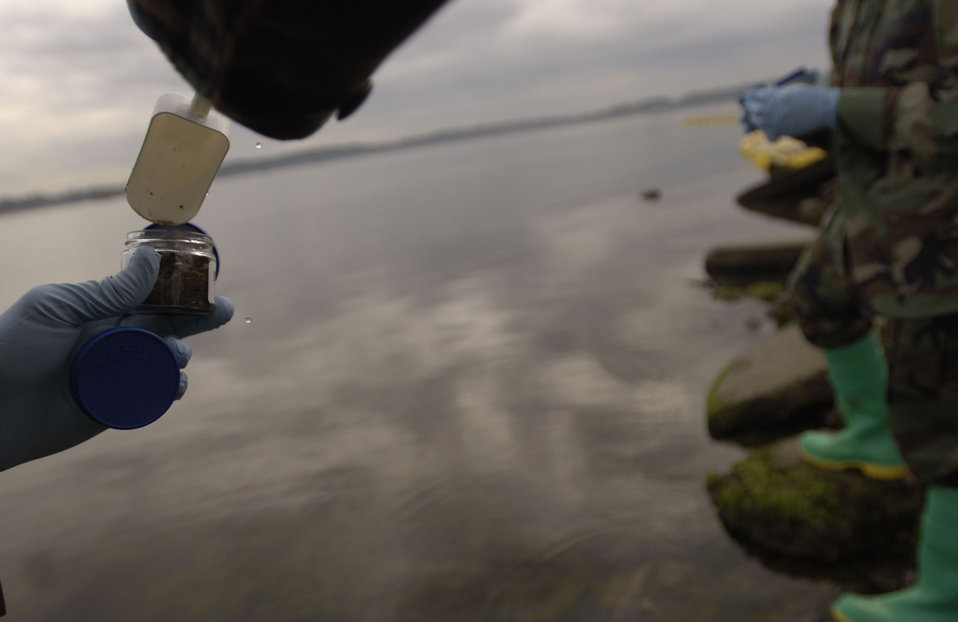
In case of emergency ...

Engineers from the 1st Aerospace Medical Squadron Bioenvironmental Office take soil and water samples during an Oil Spill Response Exercise Nov. 29 at Langley Air Force Base, Va. The oil spill exercise was designed to test the reaction and response times as well as recovery process of Langley AFB members if an environmental mishap were to take place on the installation.